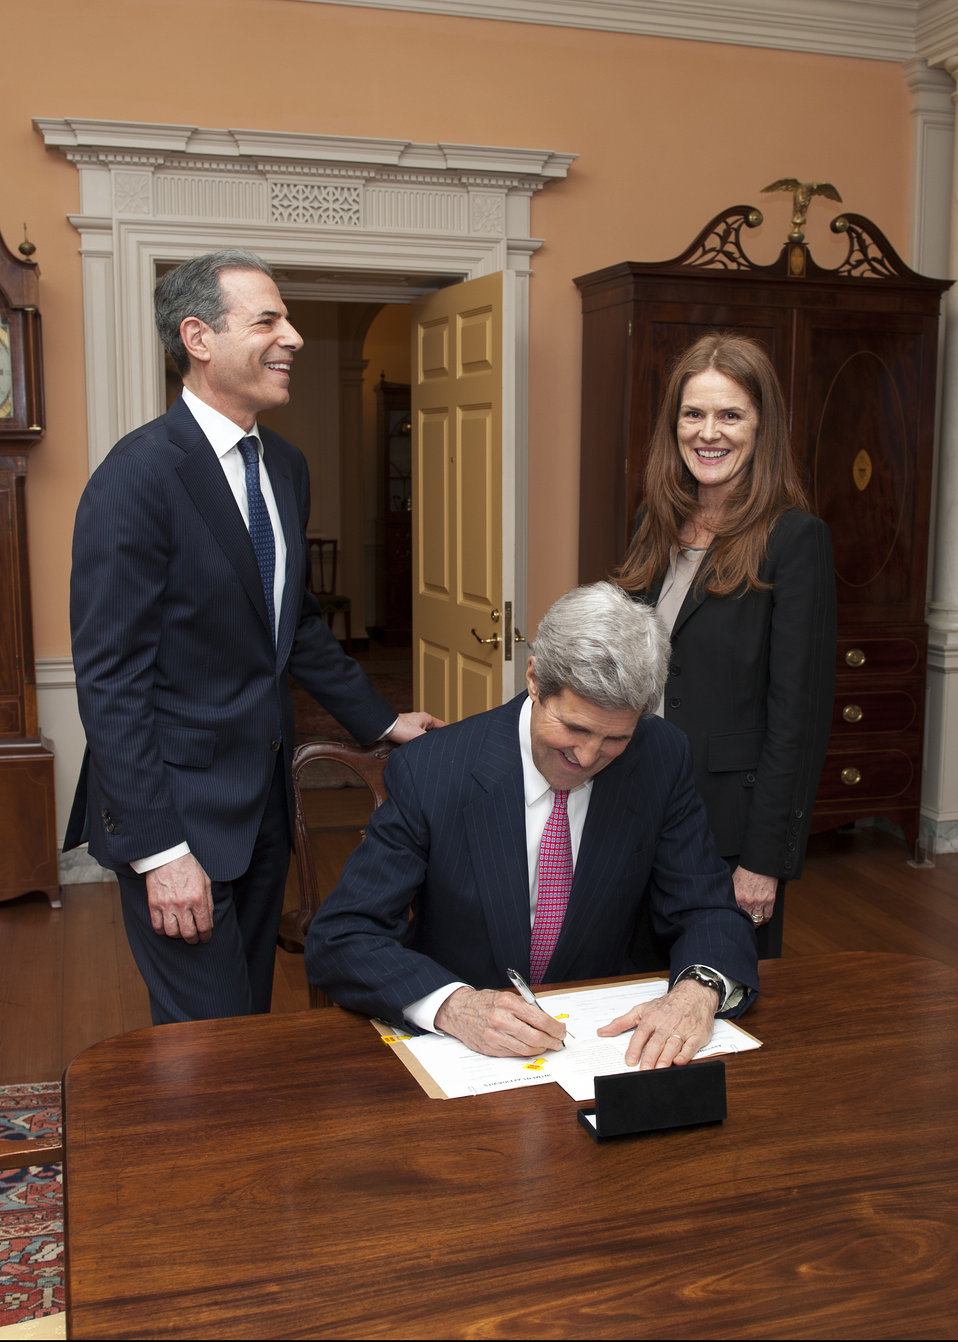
Secretary Kerry Signs Under Secretary Stengel's Appointment Papers

With Rick Stengel and his wife, Mary Pfaff, looking on, U.S. Secretary of State John Kerry signs the appointment papers for Mr. Stengel to become Under Secretary for Public Diplomacy and Public Affairs at the U.S. Department of State in Washington, D.C., on April 15, 2014.